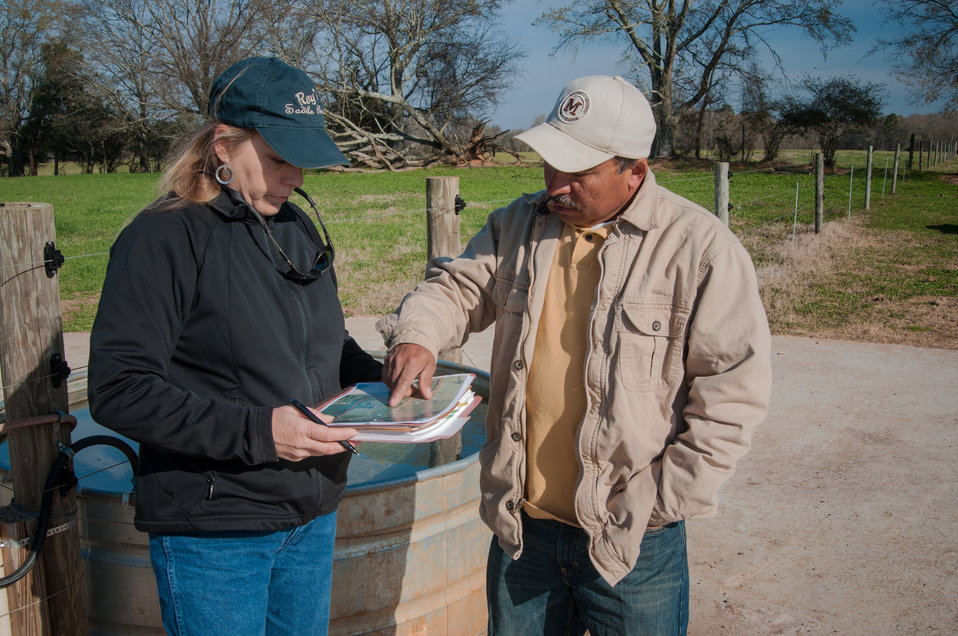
U.S. Department of Agriculture (USDA) National Resources Conservation Service (NRCS) Soil Conservation Technician Lynne Roney and Banamacc Farms owner Raul Moreno examine a heavy use area around a watering trough in his pasture in Edison, Calhoun County, GA on Mar. 7, 2013. Moreno's conservation plan calls for cross fencing and concrete pads around watering troughs. Moreno was able to secure funding for the improvements with a USDA NRCS Environmental Quality Incentive Program (EQIP) contract. Moreno mentioned, “NRCS provided me with specifications and designs that assisted me in installing conservation practices that will last for many years to come.” The USDA Strike Force Initiative has designated Calhoun County, GA as a Strike Force county selected to receive assistance to relieve persistent poverty in historically high-poverty counties.